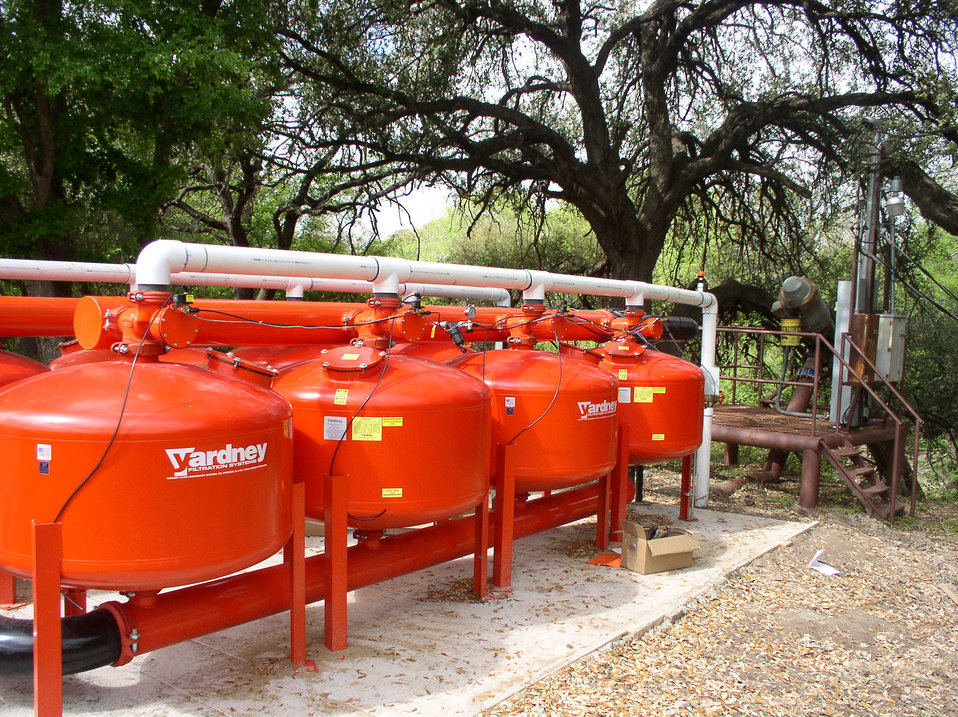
Arrowhead Farms of Zavala County, TX, now draws water from either the Nueces River (on other side of nearby trees) or deep water wells (brown pipes), either of which are filtered through sand tanks and pumped to the tree roots on Tuesday, April 6, 2010. Sediment free water is essential because, it will flow through various automated pressure and flow control valves, pipes, tubing and finally out emitters that drip water out of tiny holes at a rate of 1 gallon/hr. Each tree has several emitters under its drip line and over a typical 24 hour watering period will get just the right amount of water to survive Texas temperatures as best as possible. The farm has been owned by Mr. Akram Mohammad, a pecan farmer since 2005. The 719-acre farm with 10,000 trees, features some orchards with underground micro irrigation system that feeds water to the roots of 4,380 pecan trees on 146 acres. Mr. Mohammad said, “USDA (U.S. Department of Agriculture) was essential to my business and trees surviving the recent exceptional drought. The trees were stress free thanks to underground micro-irrigation. This is essential to the future growth of Texas agriculture and good for America.” U.S. Department of Agriculture’s (USDA) Environmental Quality Initiative Program (EQIP) awarded Mr. Mohammad a $130,000 grant in 2008. He provided $26,000 for the balance of the $156,000 total cost to install a 146-acre underground micro-irrigation for 4,380 trees.